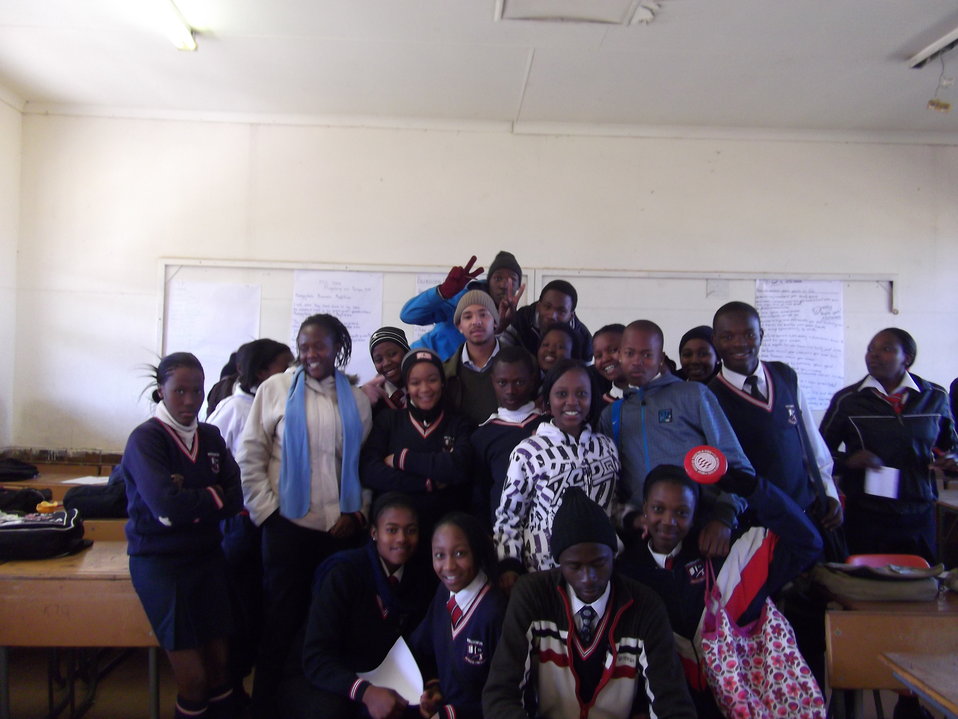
Pickering Fellow Roberts and South African Students Smile for a Photo

U.S. Department of State Pickering Fellow Tau Shanklin Roberts poses for a photo with students participating in an English Skills Workshop organized by the English Language Office of the U.S. Embassy Pretoria at the Buhlebenfundo Secondary School in Tskane, Gauteng Province, South Africa, on June 15, 2010.